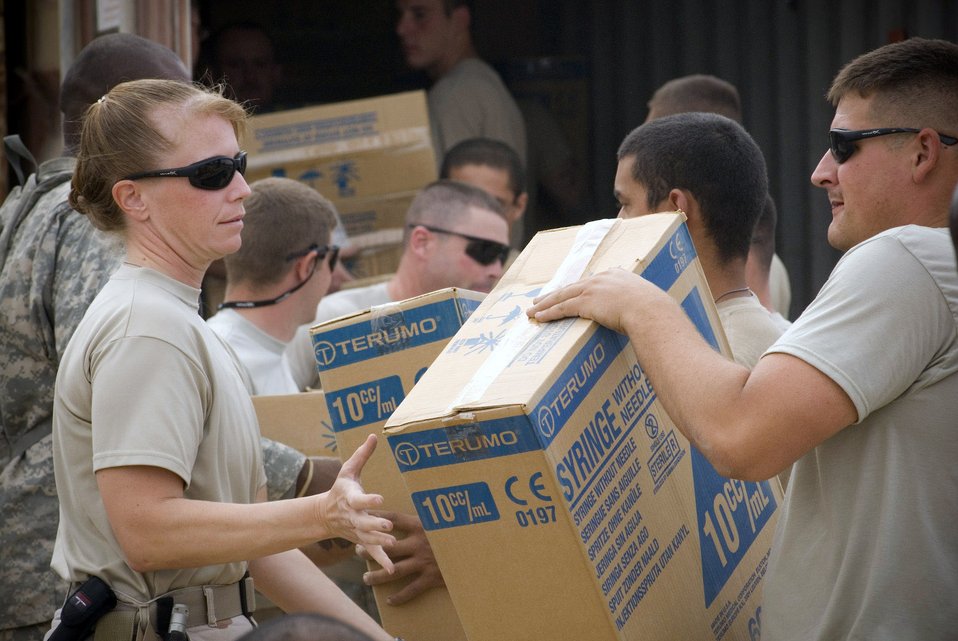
Mobile readiness team supports Army in Iraq

Airmen from Material Recovery Team III with the 732nd Expeditionary Logistics Readiness Squadron and Soldiers from 1st Battalion 9th Infantry Regiment unload a container express Oct. 19 at Camp Corregidor, Iraq. Serviceable assets recovered from the container express are inventoried and redistributed to Army units throughout Iraq. Airmen of various career fields volunteer to augment the Army in nontraditional